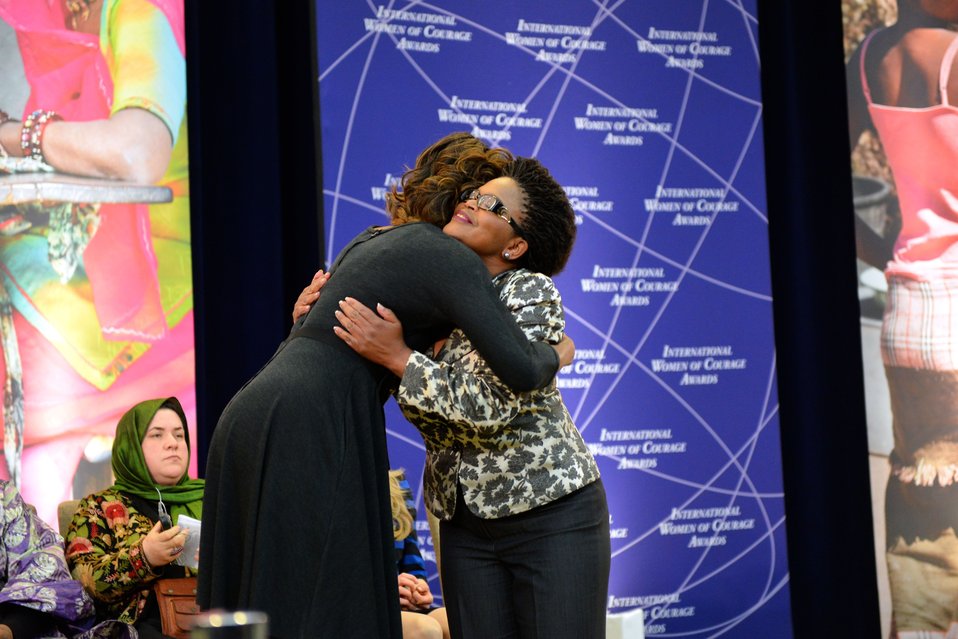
First Lady Michelle Obama Embraces 2014 IWOC Awardee Beatrice Mtetwa of Zimbabwe

First Lady Michelle Obama embraces 2014 International Women of Courage Awardee Beatrice Mtetwa, a human rights lawyer in Zimbabwe, at the 2014 Secretary of State’s International Women of Courage Award Ceremony at the U.S. Department of State in Washington, D.C., on March 4, 2014.